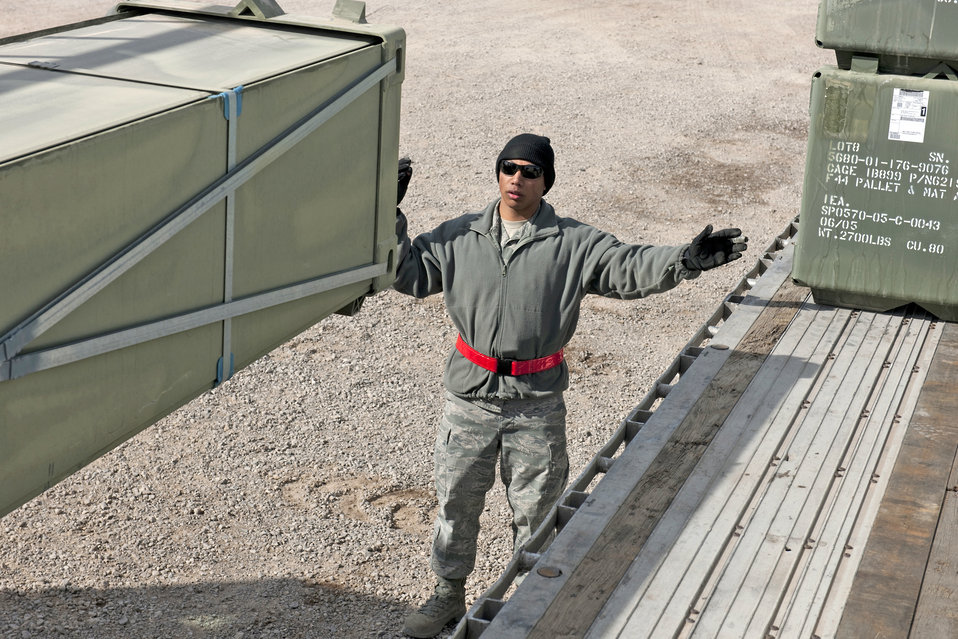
Airmen prepare BEAR base for troops in Afghanistan

Airman 1st Class Teddy Perez ground-guides a 13,000-pound loader carrying nearly 11,000 pounds of AM-2 matting onto a flatbed trailer Feb. 24, 2010, at Holloman Air Force Base, N.M. Airman Perez is assigned to the 49th Materiel Maintenance Support Squadron. The 49th MMSS is deploying 480,000 square feet of the matting that will be assembled to create airstrips supporting joint and coalition forces throughout Afghanistan.